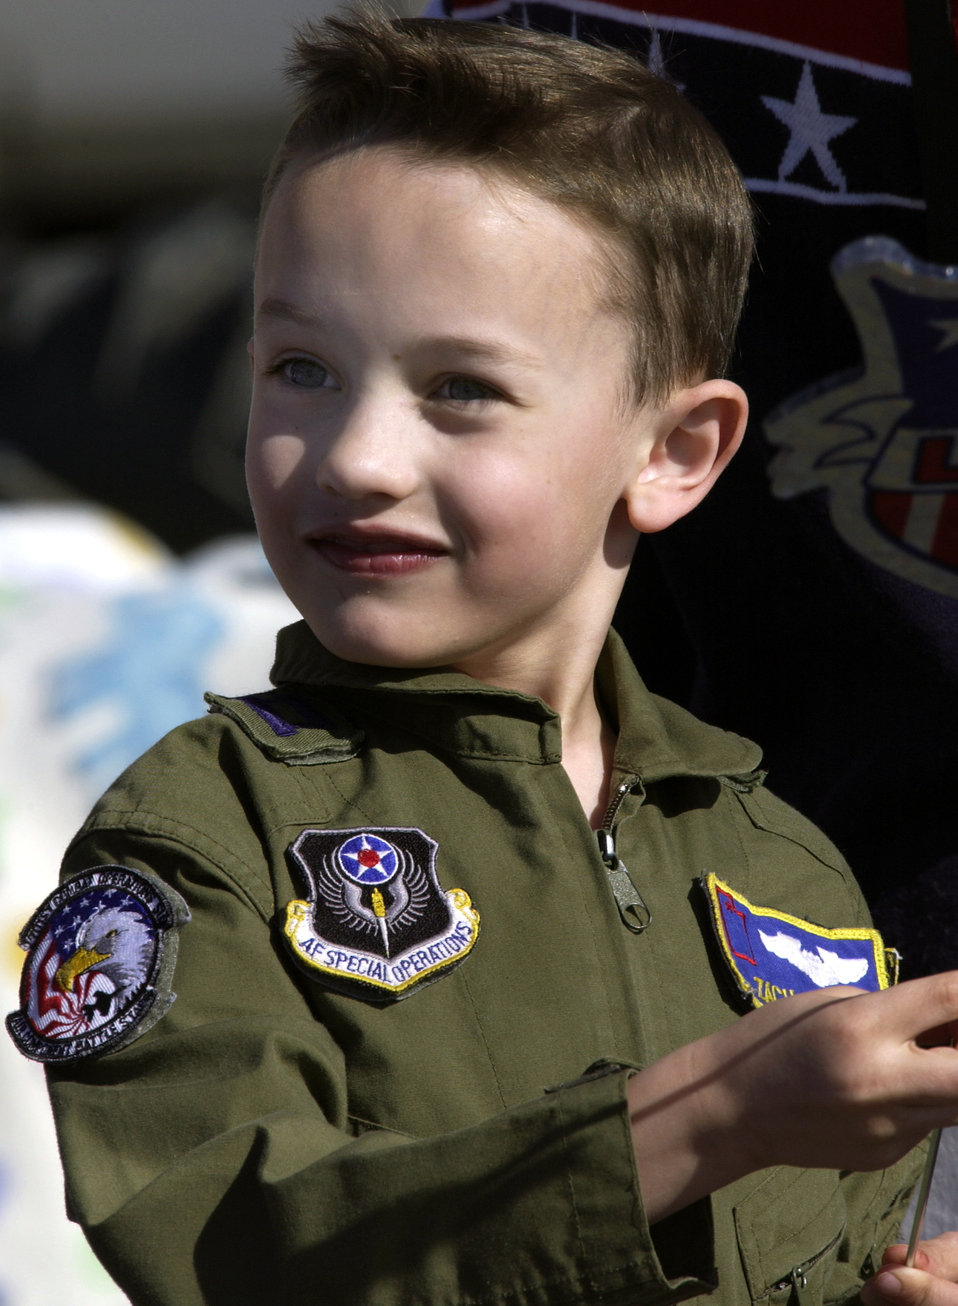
Waiting for dad

SALT LAKE CITY -- Decked out in his own flight suit, Zack Jezak, waits to greet his dad, Capt. Kevin Jezak, at the airport here. Zack's dad is a member of the 151st Air Refueling Wing, Utah Air National Guard. The 151st ARW was deployed supporting the Operation Iraqi Freedom air bridge.